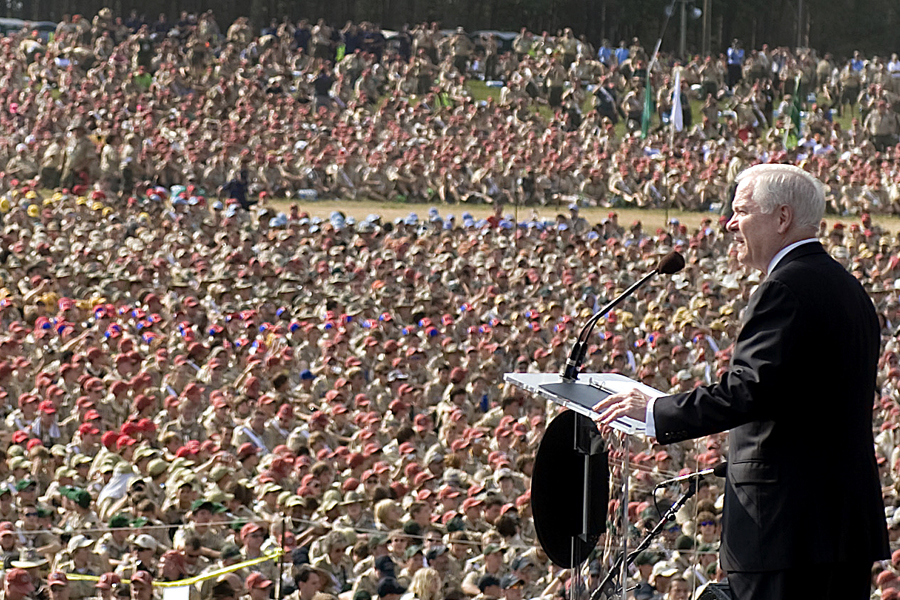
Boy Scout Jamboree

Defense Secretary Robert M. Gates addresses an audience of more than 45,000 July 28, 2010, during the 2010 National Boy Scout Jamboree at Ft. AP Hill, Va. The massive group of Boy Scouts from all across America came to the 12,000-acre site for 10 days to celebrate the organization's 100-year anniversary.